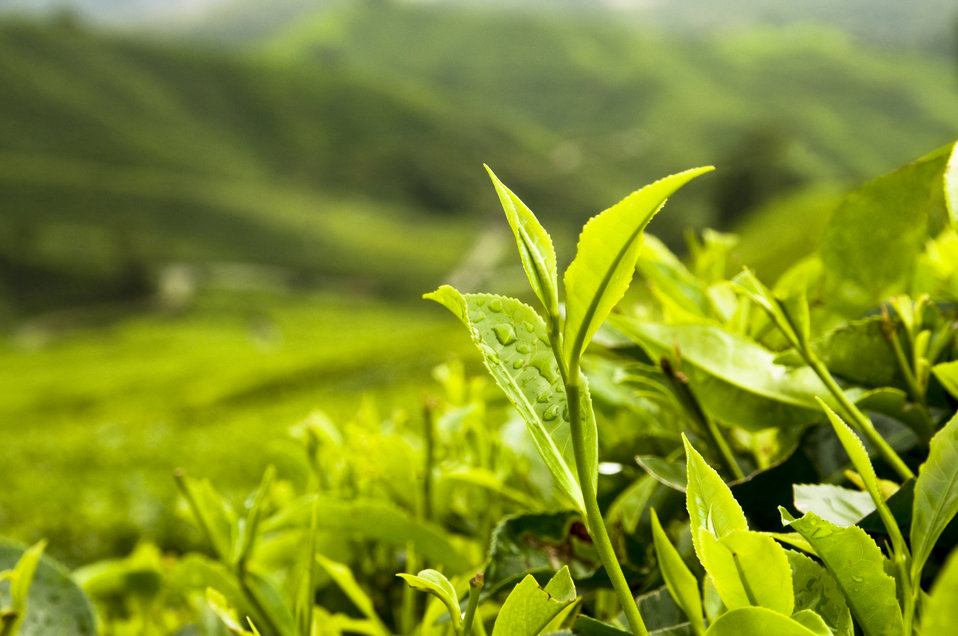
Growing Tea Leaves

This partnership is a win for the American economy and sets the foundation for additional organic agricultural trade agreements in Asia.